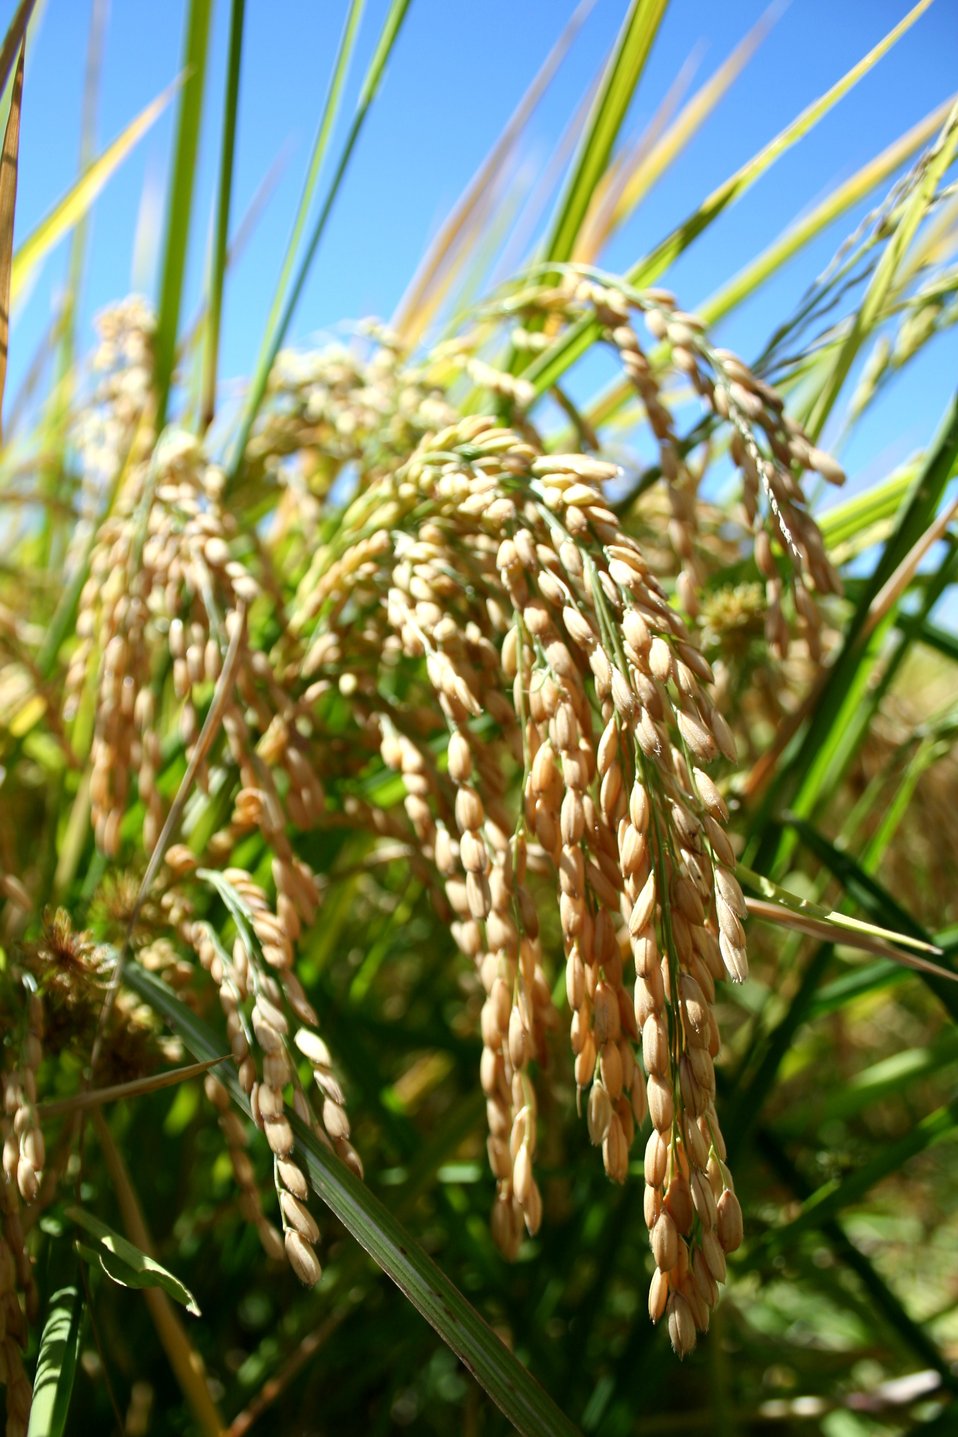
FDA's Rice Tour: Looking for Insights on Arsenic (0830)

FDA Commissioner Margaret A. Hamburg and colleagues visited research facilities and rice farms in California on Sept. 4-5, 2013 in an effort to gain a greater understanding of the presence of arsenic in rice. Shown is a rice field at the Lyle Job farm in Richvale, Calif. For more information, read the FDA Voice blog:

• On Farms and in Labs, FDA and Partners Are Working to Get Answers on Arsenic in Rice